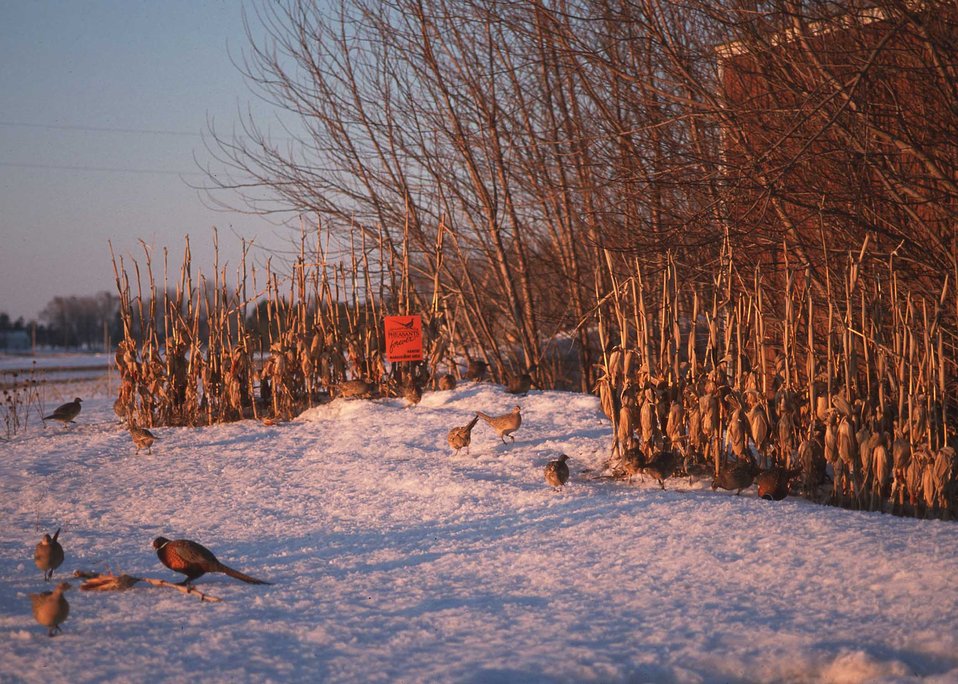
Pheasants and other wildlife species need both food and cover in harsh Iowa winters. It is provided by landowners with both annual and perennial plantings.